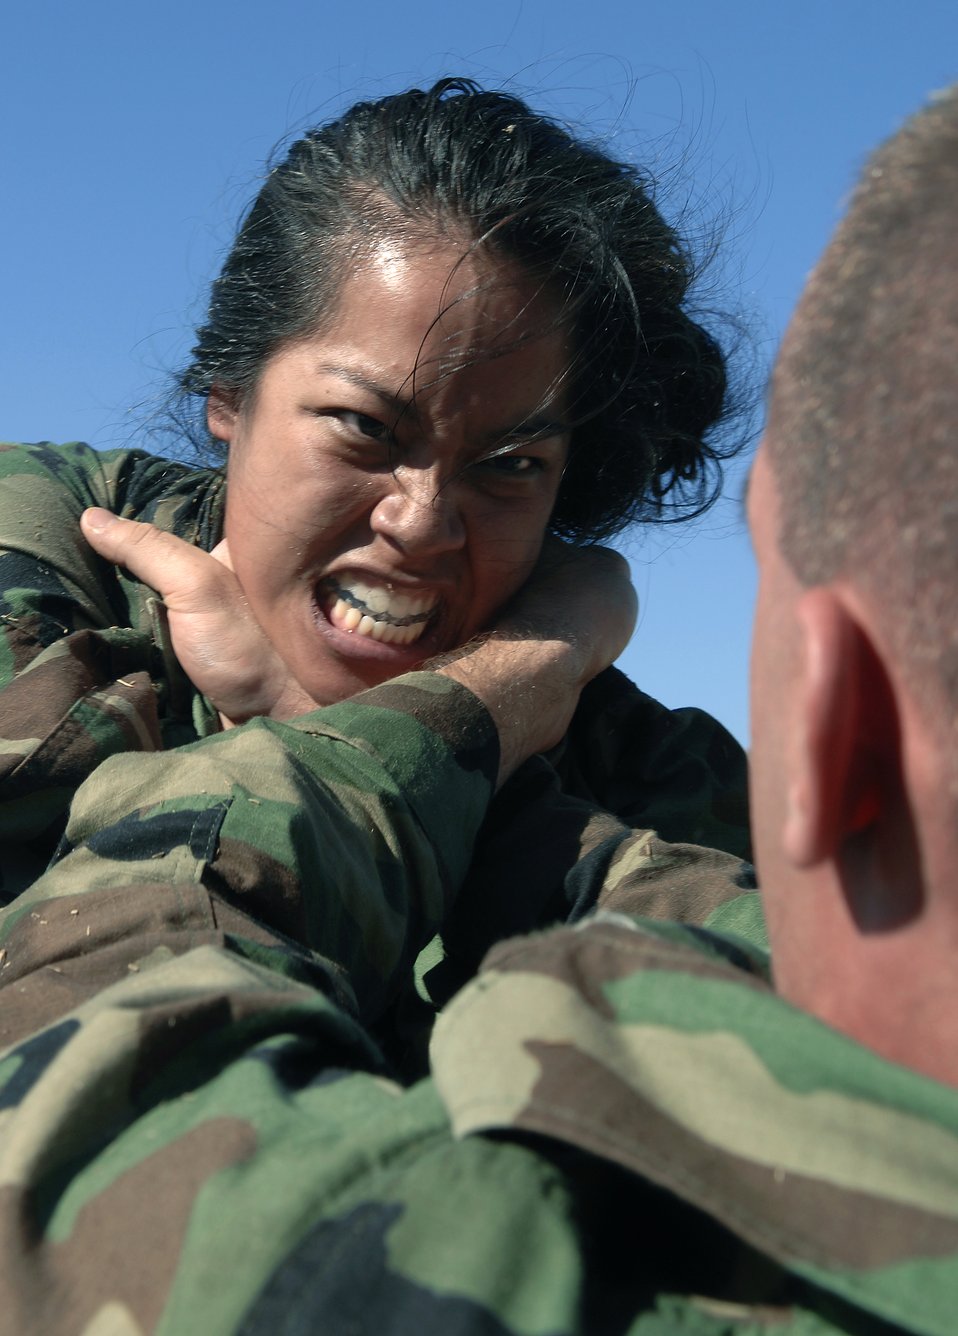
OTS begins new close combat course

Air Force officer trainees practice close-combat tactics Feb. 8 during the new Air Force Combative Program field exercise at the Officer Training School at Maxwell Air Force Base, Ala. All officer accession students are being given 11 hours of combative-skills training. Trainees learn ground fighting and basic jujitsu-style grappling moves to provide them with the confidence they need to defend themselves in combat situations.